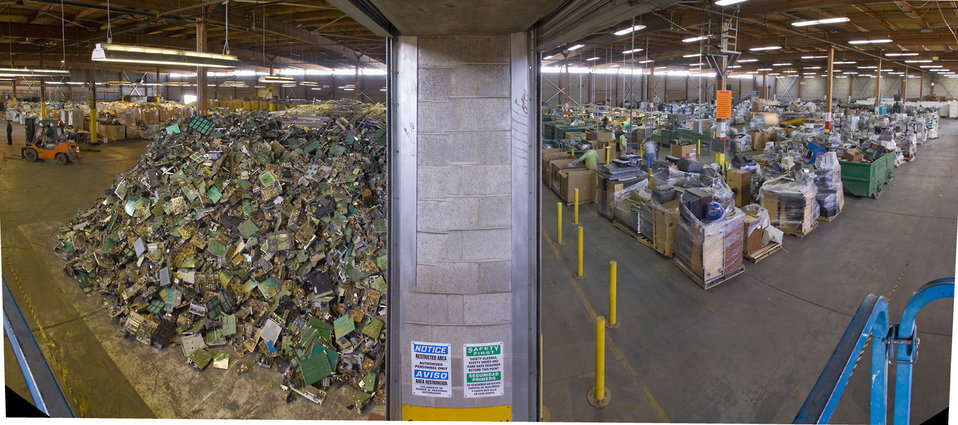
Green businesses

Piles of used computer parts are waiting to be recycled at California Electronic Asset Recovery at the former Mather Air Force Base in Sacramento, Calif. CEAR workers recycled more than 15 million pounds of e-waste last year.